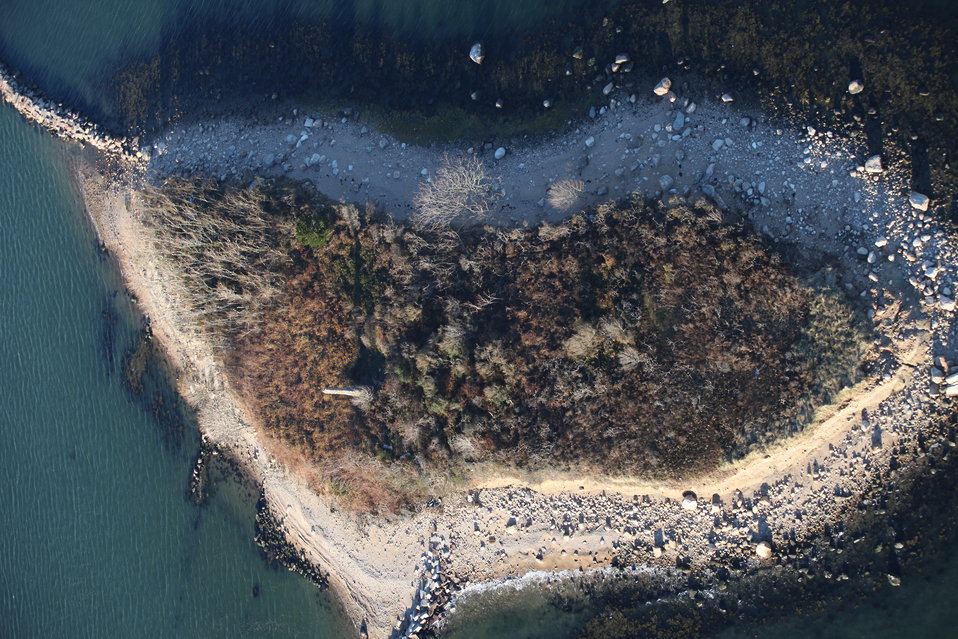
Stewart B. McKinney National Wildlife Refuge-Duck Island (CT)

An aerial view of Duck Island at the Stewart B. McKinney National Wildlife Refuge in the aftermath of storm Sandy.